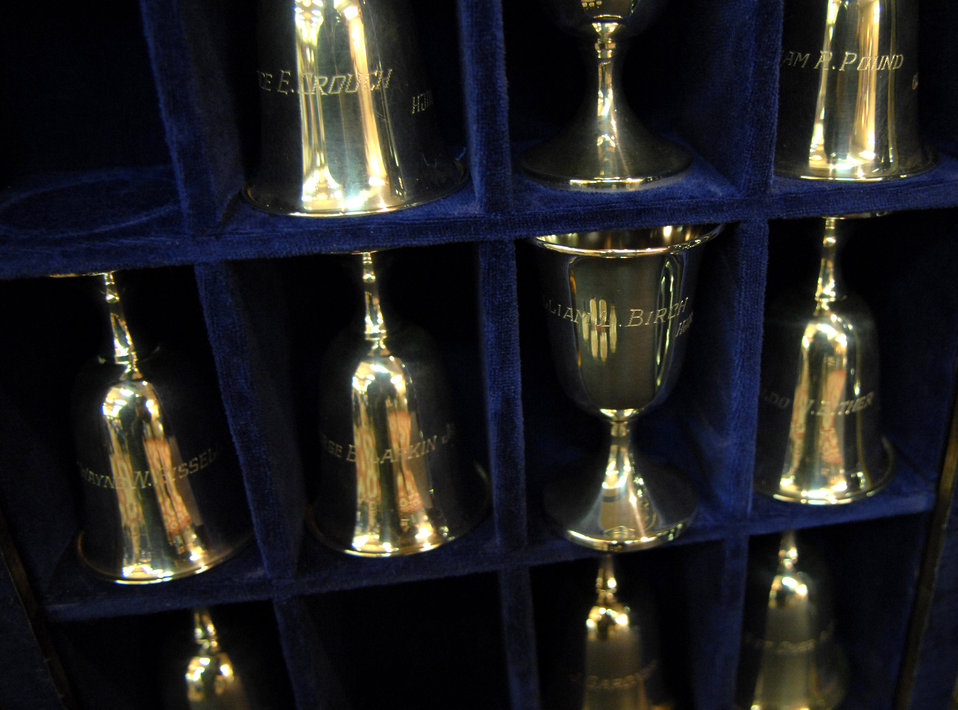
Doolittle Raiders celebrate 65 years since historic mission

The goblet of Staff Sgt. William L. Birch, a Doolittle Raider and bombardier from crew No.11, was turned over during a Goblet Ceremony April 18 as part of the 65th Anniversary Doolittle Raider Reunion held in San Antonio. A toast was made in Sergeant Birch's honor. He passed away Nov. 18, 2006. When a Raider dies, a toast is made their honor and the goblet is turned upside down. When there are but two Raiders left, the two men will open a bottle of cognac, vintage 1896, the year Jimmy Doolittle was born, and once final toast will be made to the departed comrades. Fourteen of the 80 raiders are still alive.